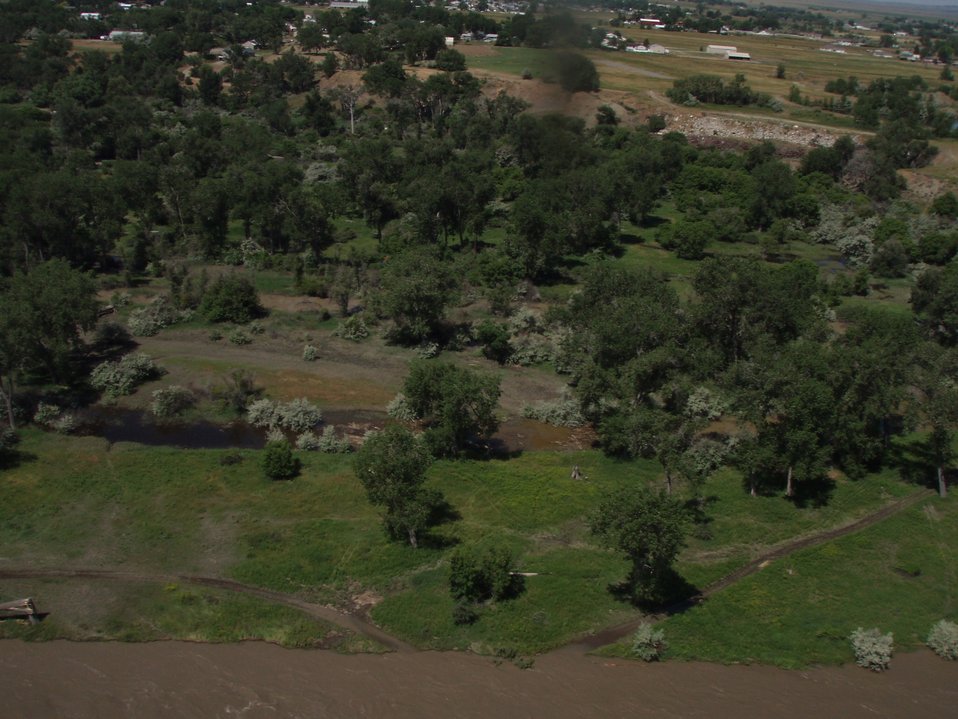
Aerial Wildlife Survey

U.S. Fish and Wildlife Service Environmental Contaminants Specialists regularly fly over the Silvertip Oil Spill to spot potentially oiled wildlife by looking for signs of distress. The locations of spotted wildlife are provided to avian specialists of International Bird Rescue (IBR) so that they may attempt capturing the affected wildlife. Additionally, the spotters note the oiled areas that intersect with prime habitat for species of concern. These areas are provided to IBR specialists for them to inspect by ground or water, weather permitting.